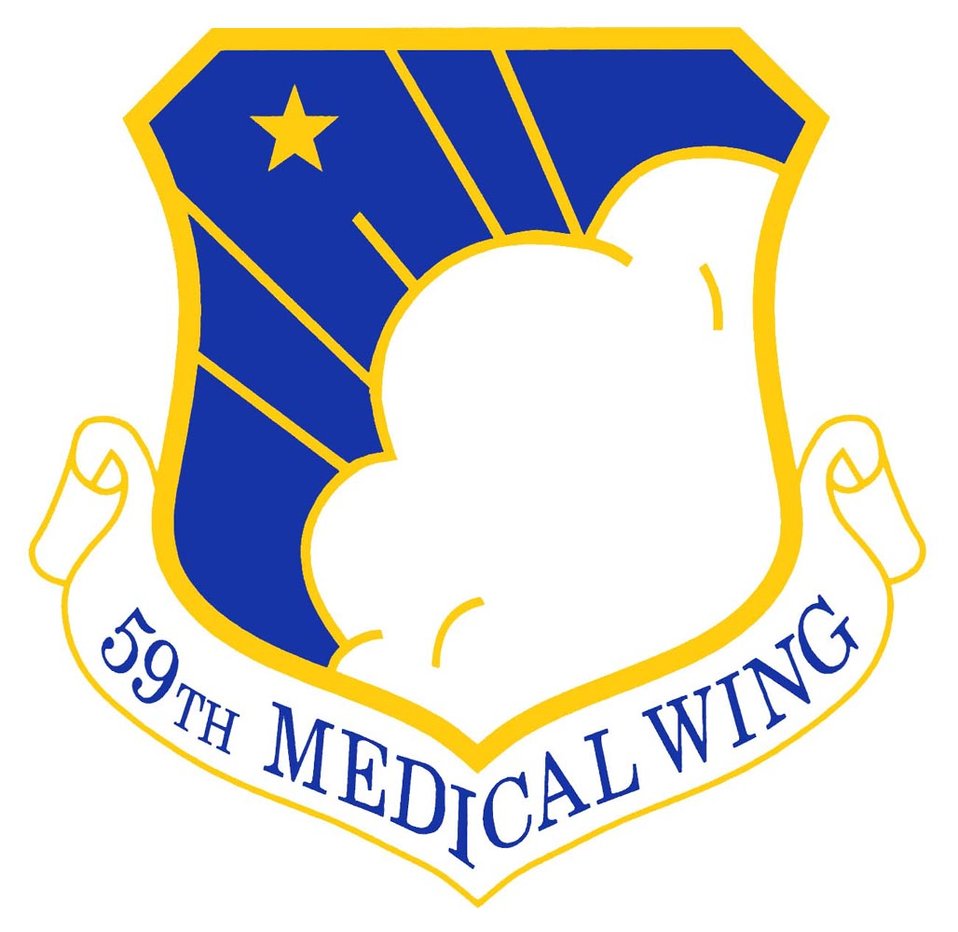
59th Medical Wing shield